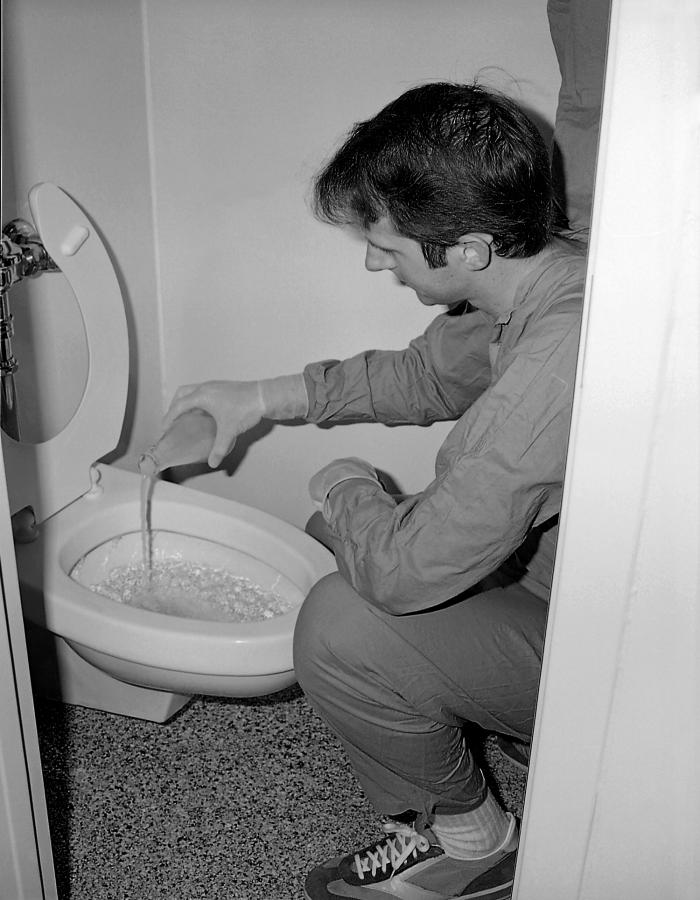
This 1978 photograph shot for purposes of creating a training package, showed Dr. R. Regnery adding a solution of harmless bacterial spores to the self-contained water collection system of a Maximum Containment Laboratory facility in order to test the effectiveness of the system's heat inactivation functionality.